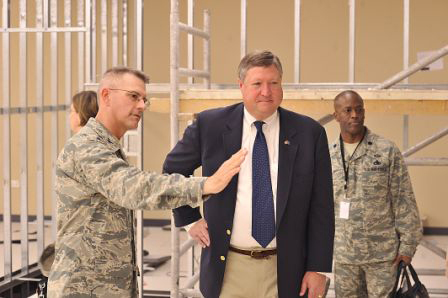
Secretary Donley visits the CAOC

Col. Michael Humphrey from the Combined Air and Space Operations Center in Southwest Asia, explains to Air Force Secretary Michael Donley on Oct. 11 how construction is progressing on the new CAOC. The CAOC is the center of command and control of air operations for the global war on terrorism in Southwest Asia.